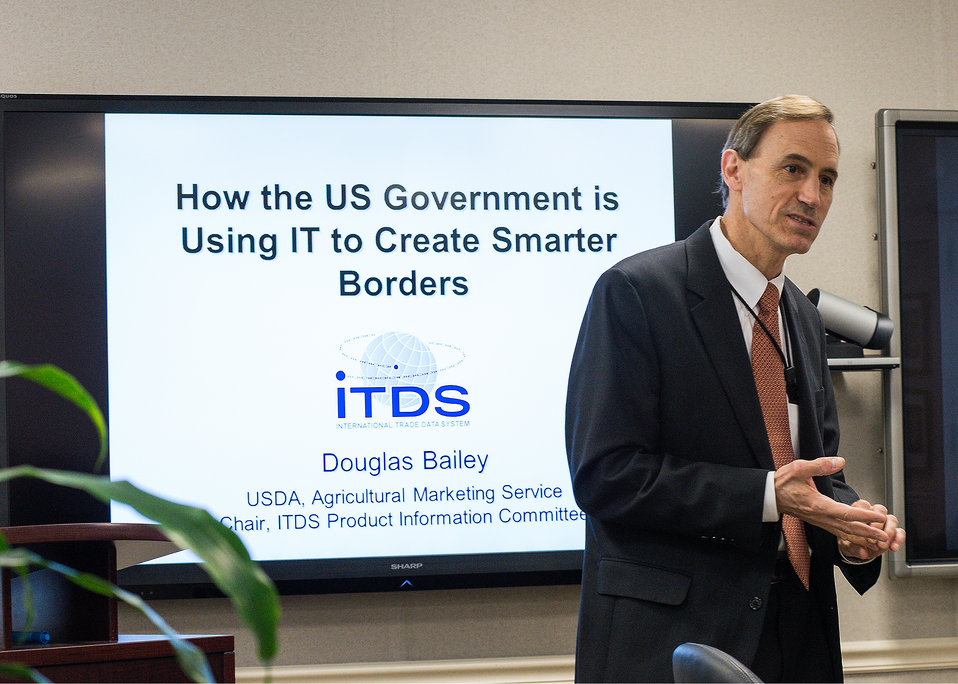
Doug Bailey, Chief Information Officer, Agricultural Marketing Service discussed, How the U.S. Government is Using IT to Create Smarter Borders with students from Thomas Jefferson High School of Science and Technology in Alexandria, VA during the U.S. Department of Agriculture (USDA), Office of the Chief Information Officer (OCIO) IT Job Shadow Day, Tuesday, Mar. 25, 2014. The OCIO IT Job Shadow Day hosts students from local high schools in the Washington, D.C. area annually with IT professionals and agricultural specialists from a variety of mission areas at USDA.